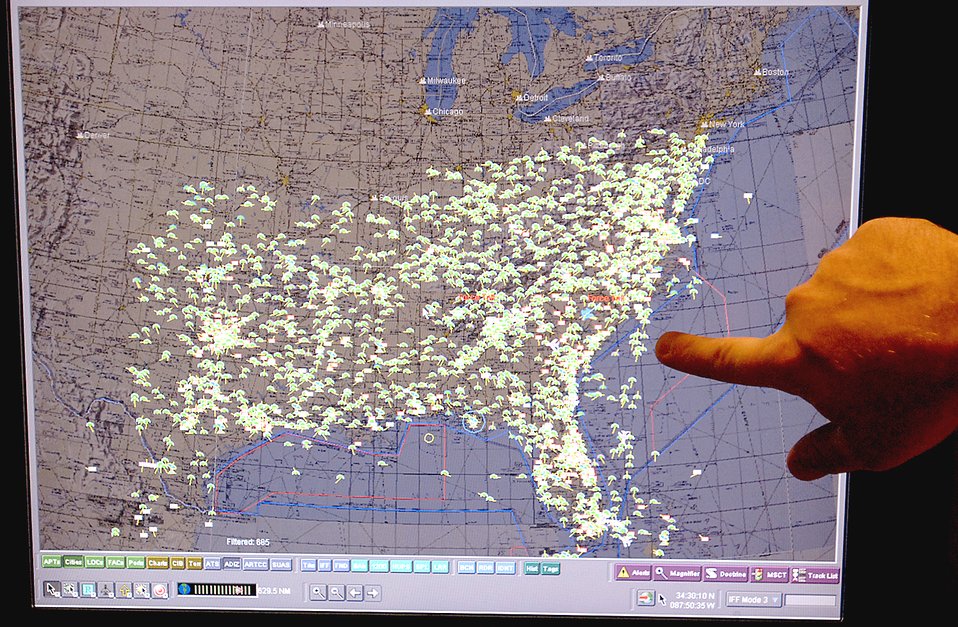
Business changes dramatically for air operations center

Master Sgt. Lynn Boop points out an aircraft on a radar screen at Tyndall Air Force Base, Fla. He is superintendent of standards and evaluations for Southeast Air Defense.